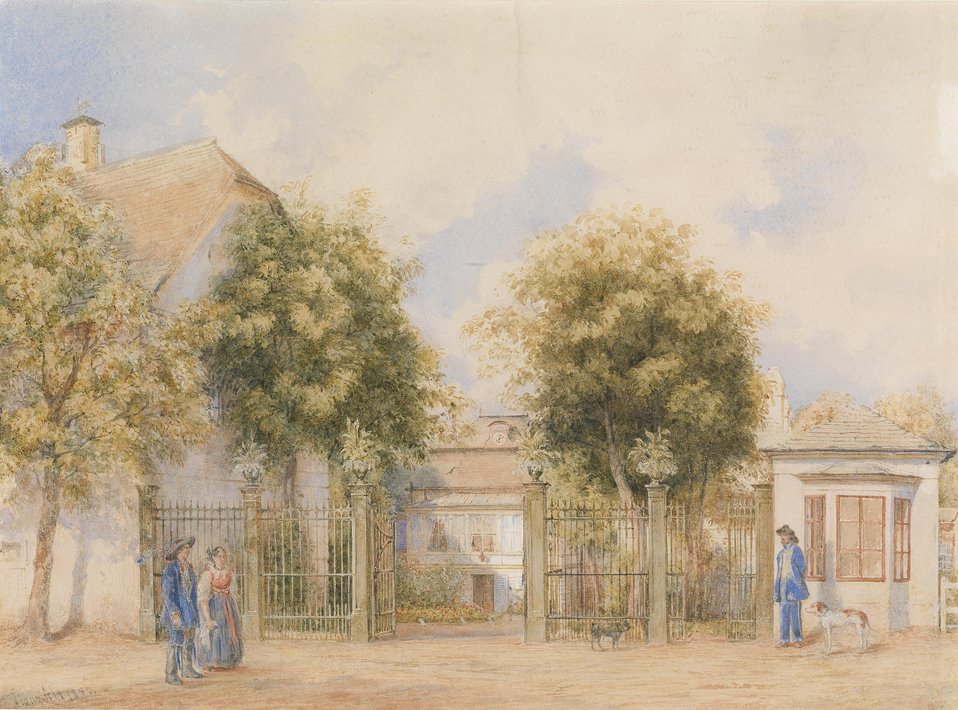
Franz Alt Biedermeierliches Haus 1846